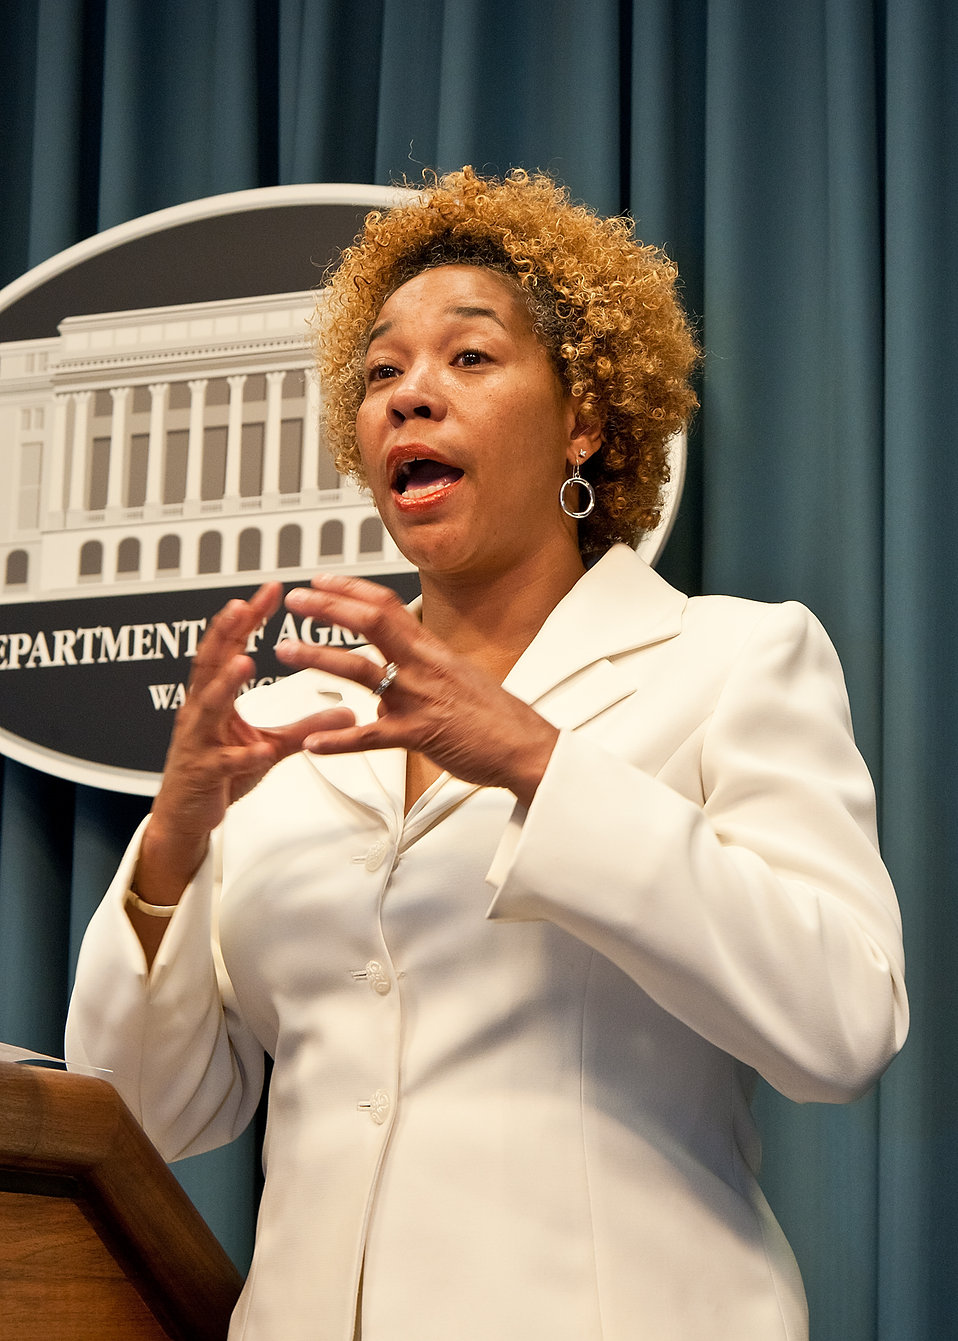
Agriculture Office of Adjudication Employment Complaints Division Chief Violet Hall explained workforce harassment and how to conduct themselves in United States Department of Agriculture (USDA) Summer Hispanic Association of Colleges and University (HACU) and Tribal College interns during their orientation at USDA in Washington, DC, Monday, Jun. 6, 2011. The HACU/Tribal College National Internship Program represents more than 400 colleges and universities committed to higher education in the U.S., Puerto Rico, Latin America, Spain and Portugal and places student interns each year with federal agencies in Washington, DC or in field offices around the country.